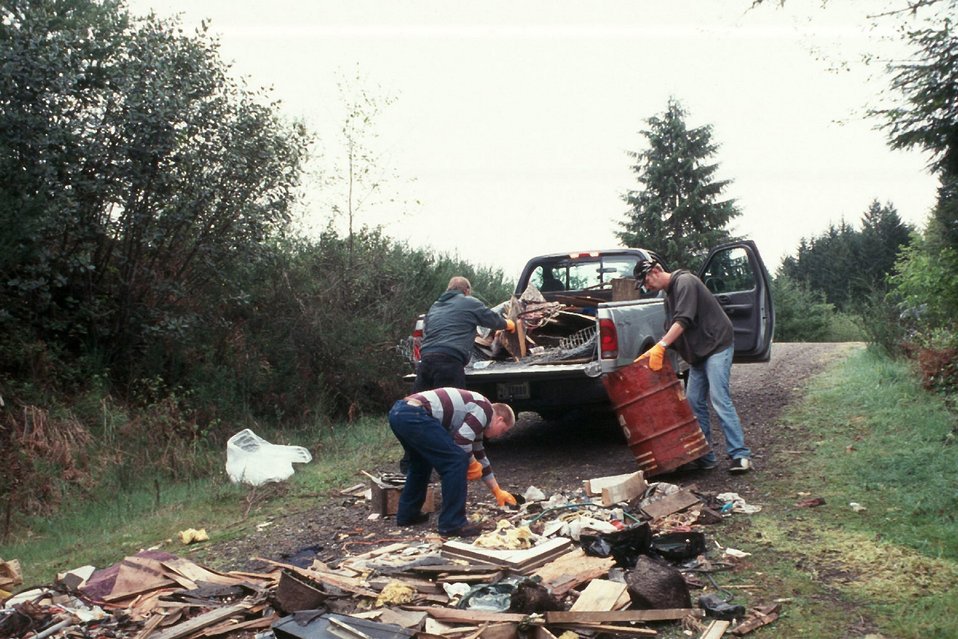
Kids from the Eugene 4J School District Life Skill Network, are picking up litter/trash at McGowan Creek.